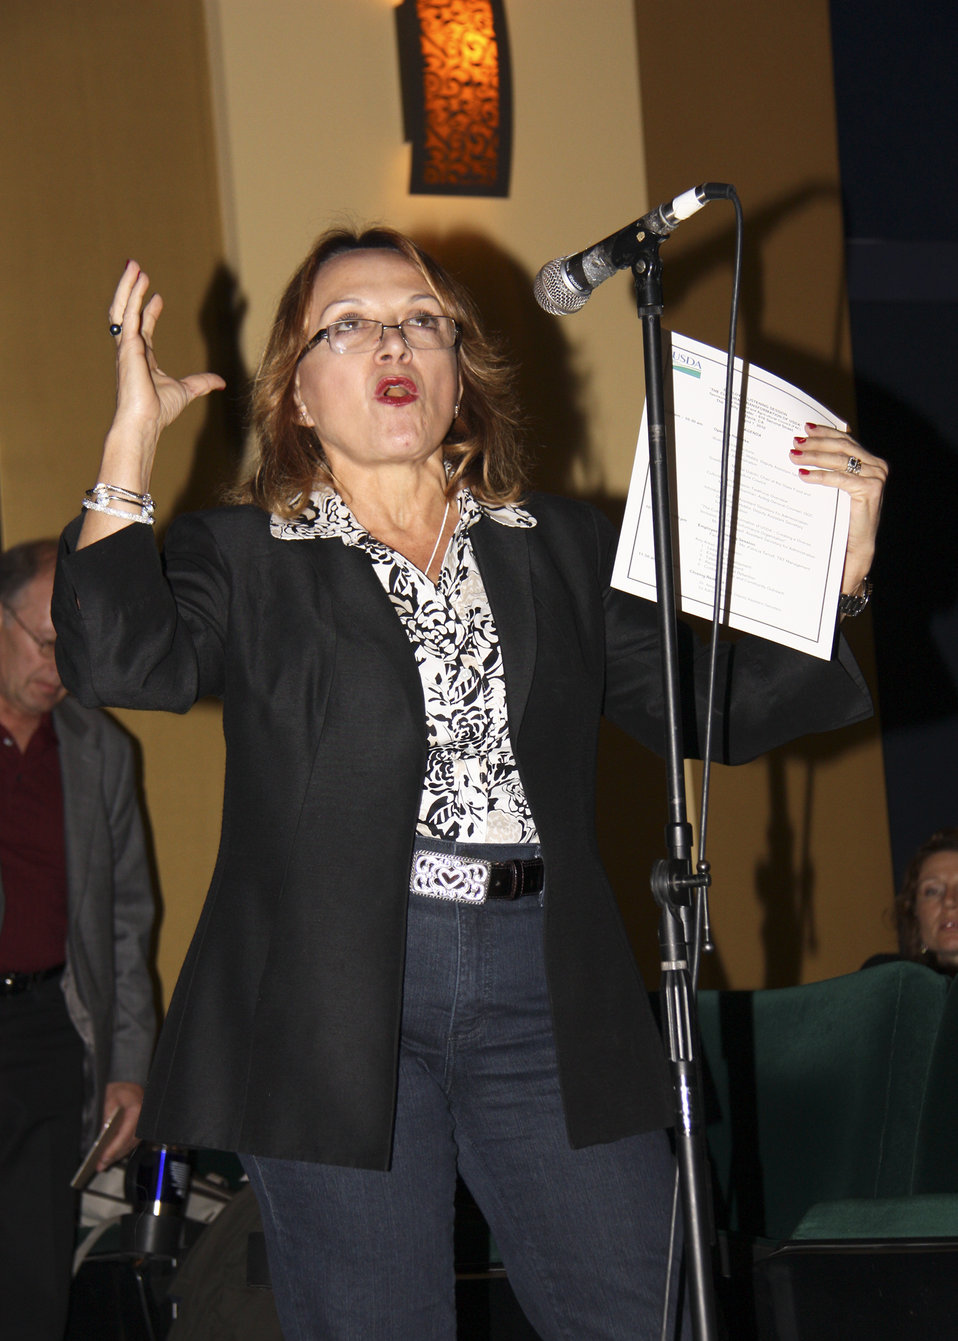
The U.S. Department of Agriculture (USDA) held the Cultural Transformation Employee listening sessions in Davis, CA, on Monday, April 12, 2010. USDA employees expressed their concerns with issues at the Department and made suggestions for correcting them and improving the image of USDA. USDA photo 10di1299-0925.